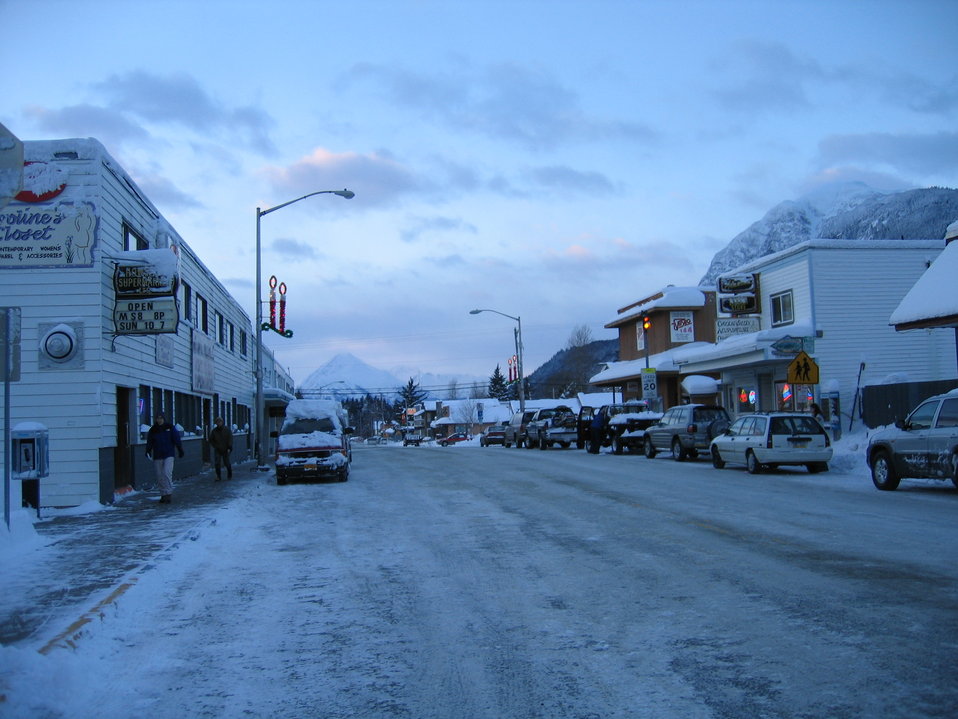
Main Street with snow, Haines, Alaska Photo by Micah Bochart en:Category:Images of Alaska